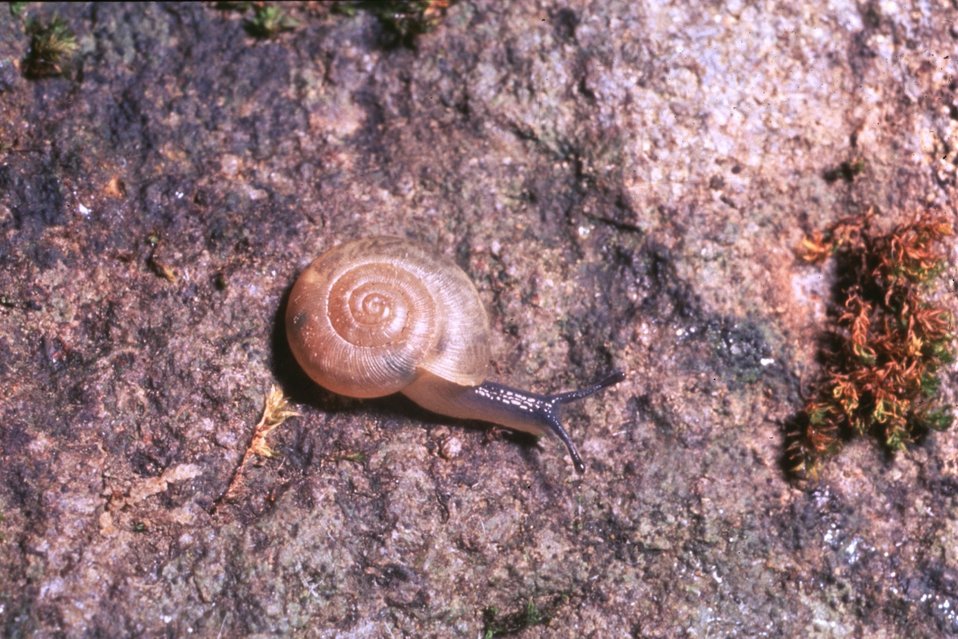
Hooded Lancetooth (Ancotrema voyanum).